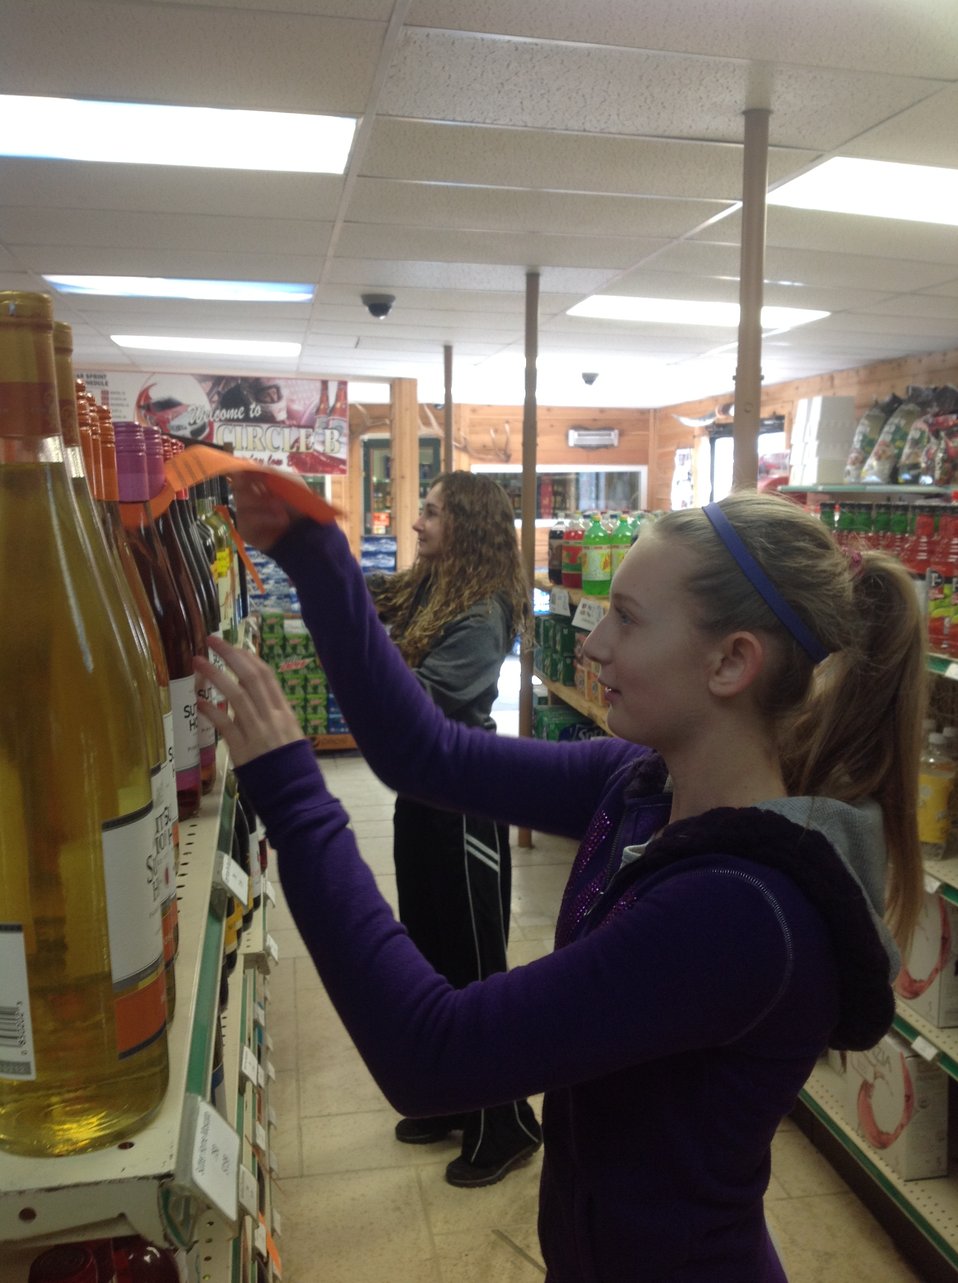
Getting the Word Out

Teenagers from the Van Buren County SAFE Coalition's, Youth Leadership Council (YLC) in Keosauqua, Iowa participate in various events during National Drug Facts Week, 2014.